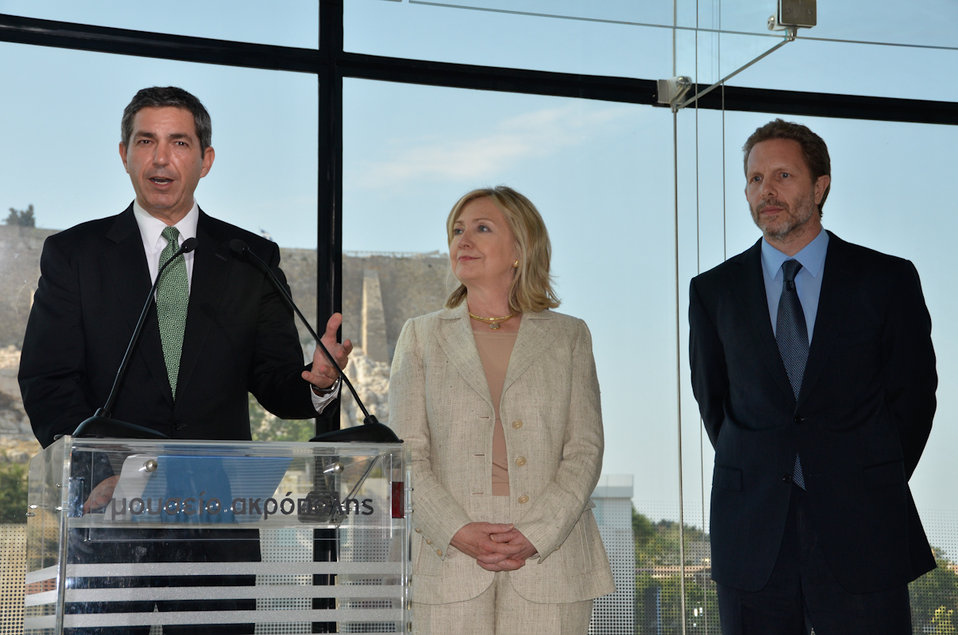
Greek Foreign Minister Lambrinidis Delivers Remarks

U.S. Secretary of State Hillary Rodham Clinton looks on as Greek Foreign Minister Stavros Lambrinidis delivers remarks after the counterparts signed an agreement to reduce the incentive for further pillage of Greece's cultural heritage at the Acropolis Museum in Athens, Greece, on July 17, 2011.